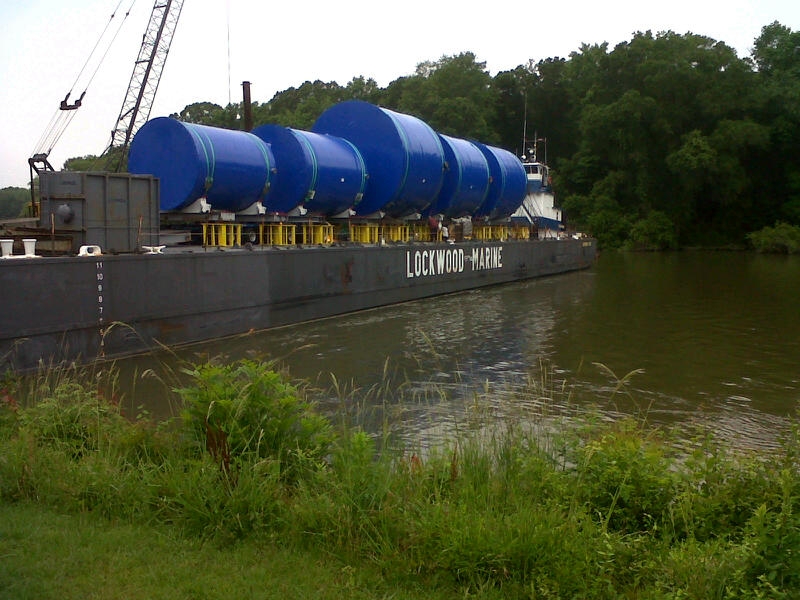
SRS Processing Tanks

Large nuclear material processing tanks destined for Savannah River Site's (SRS) Salt Waste Processing Facility, currently under construction, began arriving May 16, 2012, in Hardeeville, S.C., by sea barge for offloading and tractor-trailer transport to SRS.